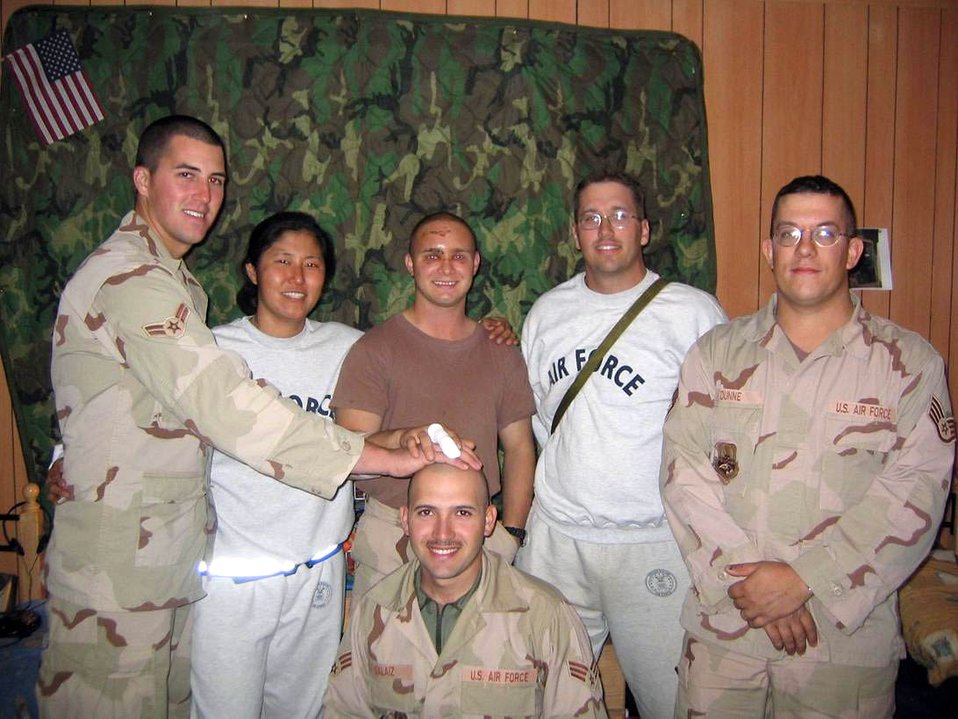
Story of Survival

BALAD AIR BASE, Iraq -- Then-Senior Airman George Keen, then-Staff Sgt. Nina Cho, Senior Airman Brian Leverton, Tech. Sgt. Dan Verscha, Staff Sgt. David Dunne and Senior Airman Mario Salaiz relax in their barracks after Airmen Leverton and Salaiz and Sergeant Dunne survived a suicide bomb attack.